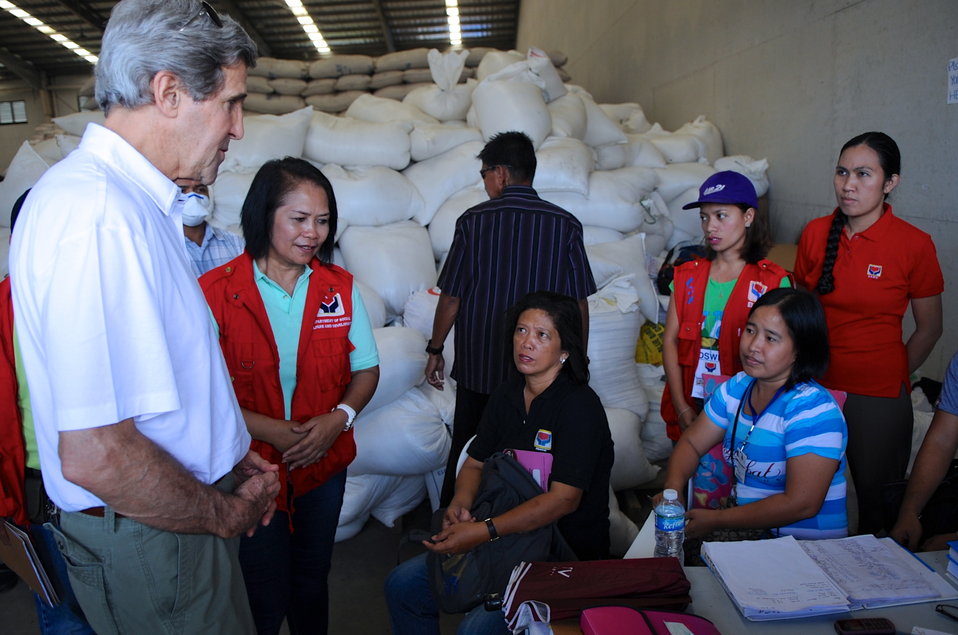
Secretary Kerry Speaks to a Tacloban City Family Awaiting Typhoon Recovery Aid

U.S. Secretary of State John Kerry speaks to a family from Tacloban City, Philippines, as they awaited aid at the community's Welfare Distribution Center on December 18, 2013.